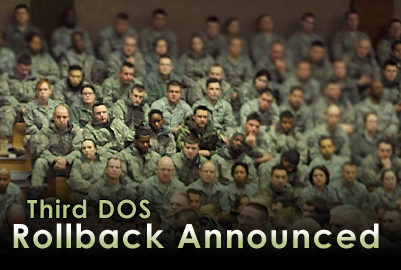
Officials announce plans for third DOS rollback

Air Force officials announced June 8 plans for a third enlisted date of separation rollback with a mandatory DOS of Aug. 31, 2010. This program is part of an overall effort by the Air Force to maintain a quality enlisted force and meet the congressionally mandated end strength.